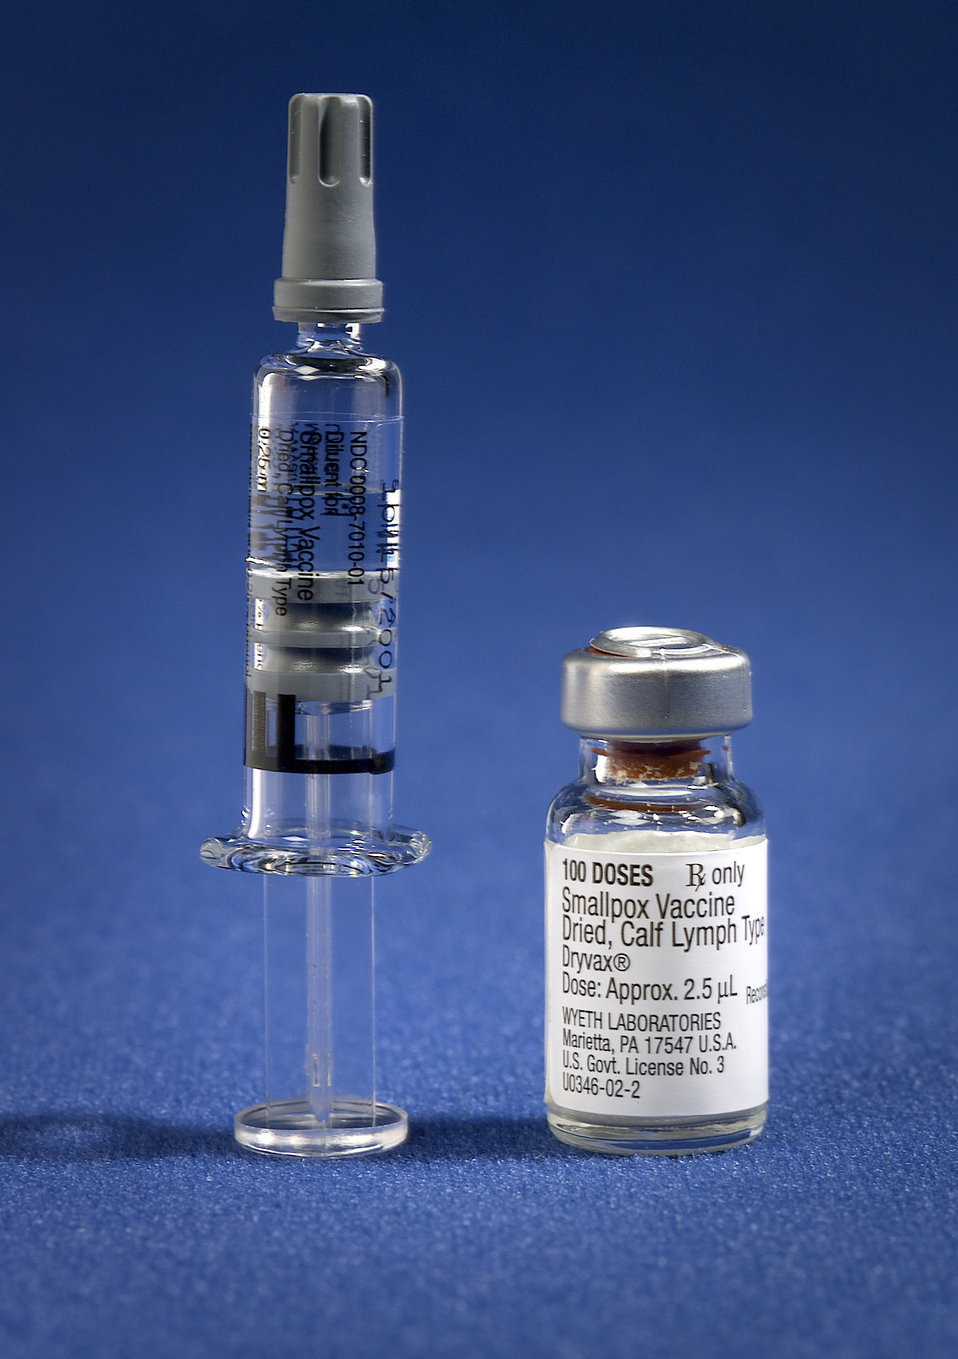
The smallpox vaccine diluent in a syringe along side a vial of Dryvax� dried smallpox vaccine.